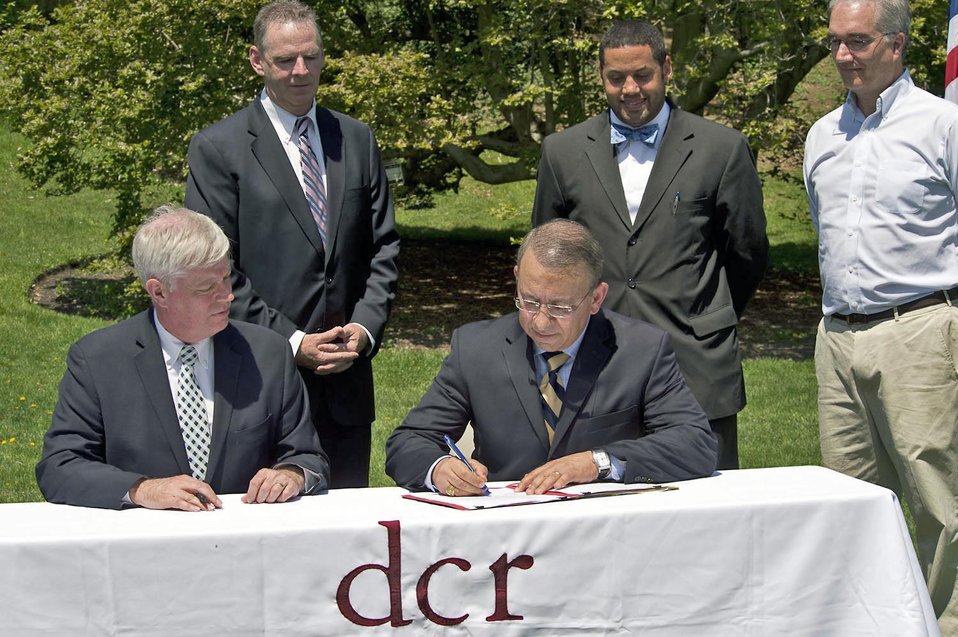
Executive Office of Energy and Environmental Affairs Secretary Richard Sullivan and U.S. Department of Agriculture (USDA) Animal Plant Health Inspection Service (APHIS) Plant Protection and Quarantine (PPQ) Deputy Administrator Osama El-Lissy sign declaration documents at the event for the eradication of Asian Longhorned Beetle (ALB) in Boston, MA on May 12, 2014. Federal, state and local officials joined together to announce that ALB has been eradicated from the Boston regulated area. Boston joins five other areas to declared eradication of ALB in the U.S. (standing L to R Commissioner of DCR Jack Murray, USDA Marketing and Regulatory Programs (MRP) Deputy Under Secretary Gary Woordward, Director of the Arnold Arboretum of Harvard University William (Ned) Friedman).